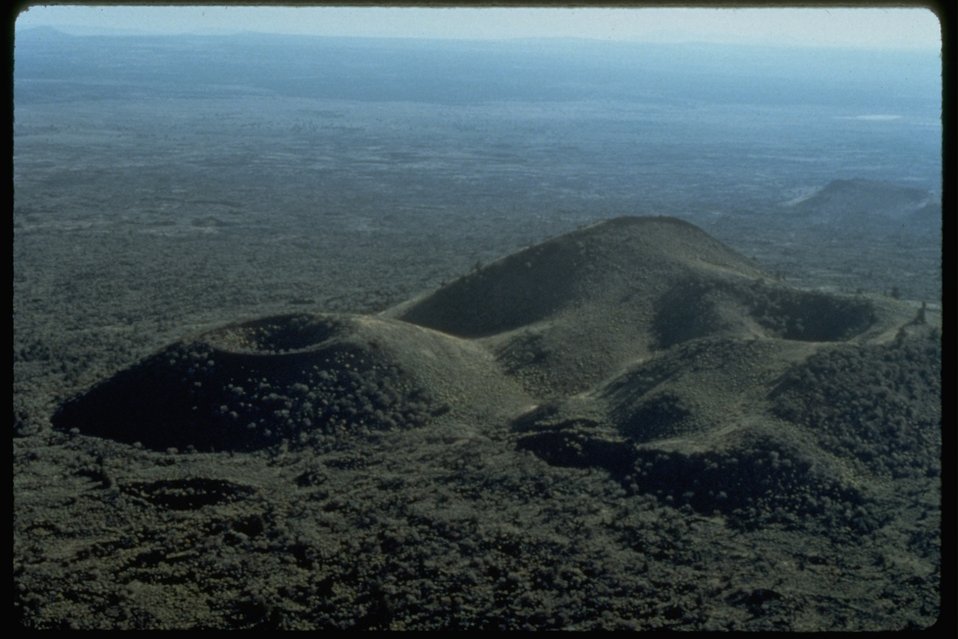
Aerial view of Lava Mountain from the Squaw Ridge Wilderness Study Area. OR 1-3.